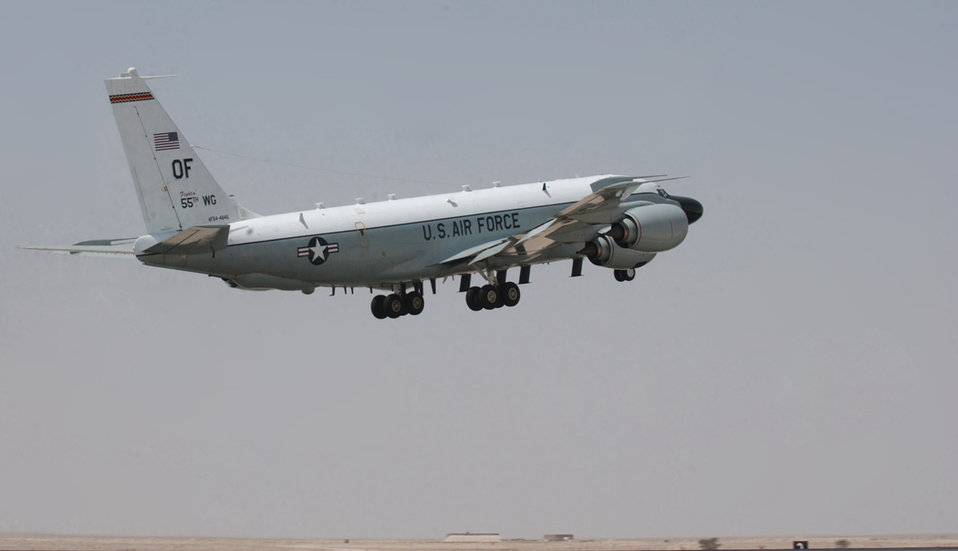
March 31 airpower: Bombers hit targets

The RC-135 Rivet Joint takes off for a mission March 27 from the 379th Air Expeditionary Wing in Southwest Asia. The Rivet Joint provides real time on-scene intelligence collection, surveillance and analysis to coalition forces in the air and on the ground in the U.S. Central Command area of responsibility. The 34-person mission crew then forwards gathered information in a variety of formats to a wide range of consumers via the Rivet Joint's extensive communications suite.